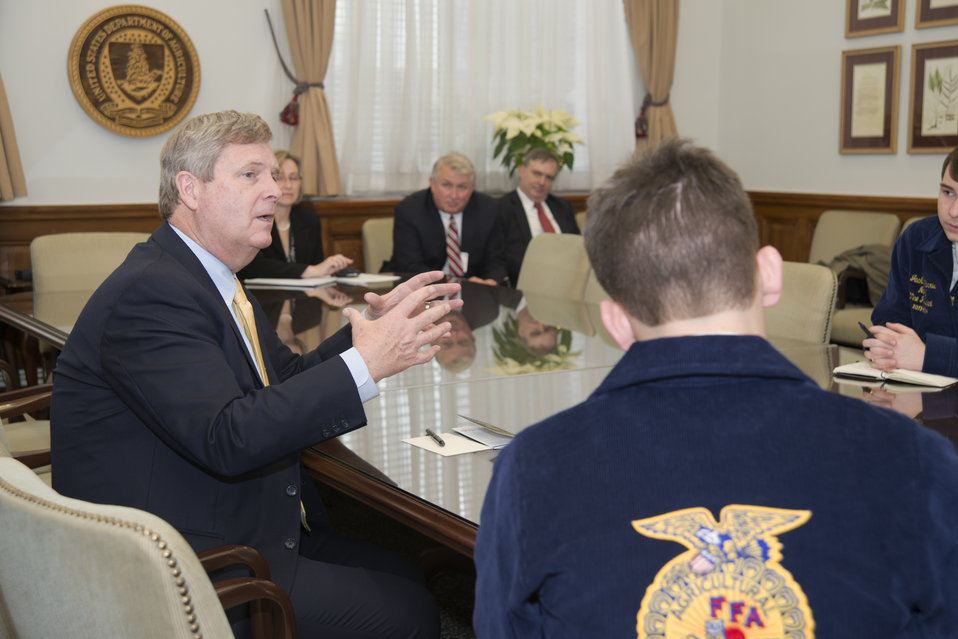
Agriculture Secretary Tom Vilsack meets with National FFA officers at the U.S. Department of Agriculture (USDA), Whitten Building in Washington, DC, on Wednesday, Jan.15, 2014.